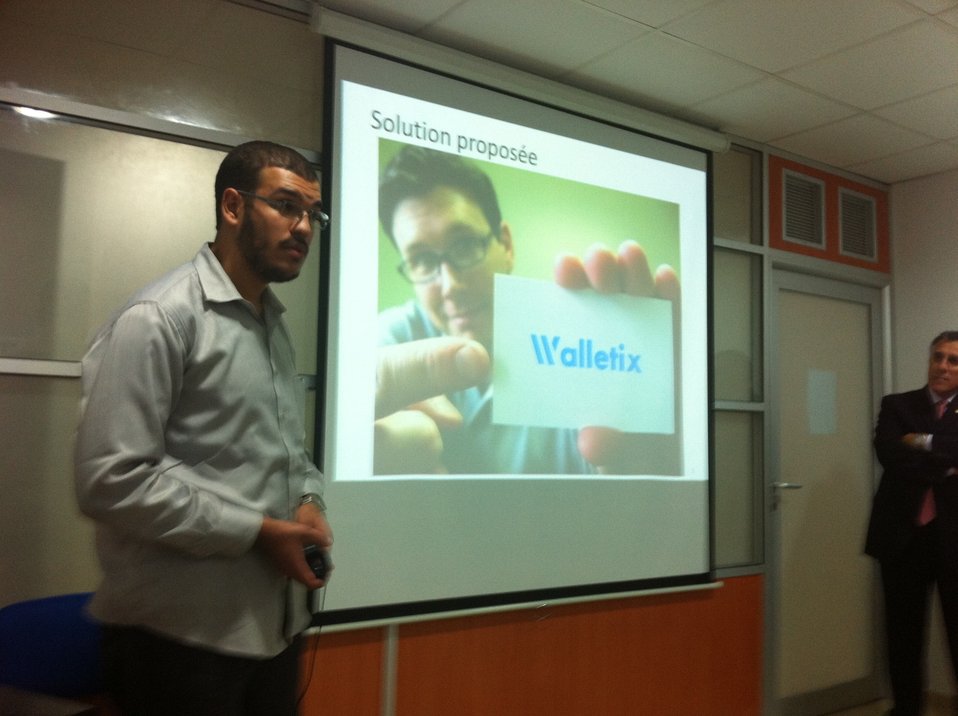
Special Represenative Hariton Poses for a Photo With Algerian Tech Town Winner Benali Presents

Youghourta Benali, Maghreb Delegation in Algeria winner and founder of Walletix, presents Walletix in Algiers, Algeria, on October 30, 2011.